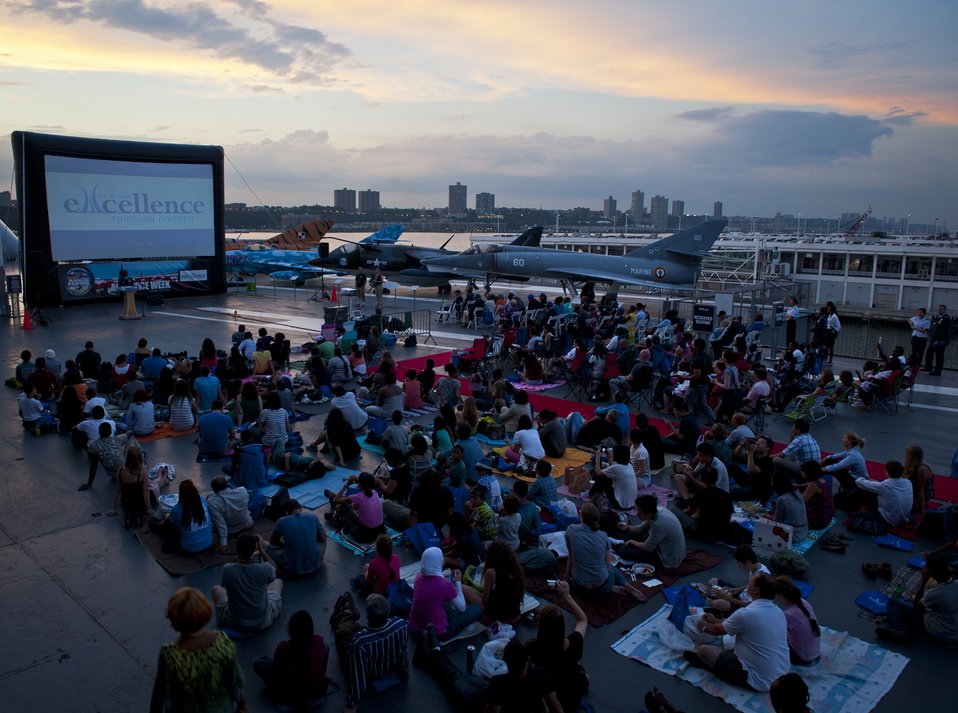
2012 Air Force Week NYC

United States Air Force officials, local residents and tourists wait for the movie, Red Tails, to play at Pier 86 during 2012 Air Force Week in New York City, on August 20, 2012. The movie represented Tuskegee Airman missions in World War II. More than five Tuskegee Airman were present for the event.